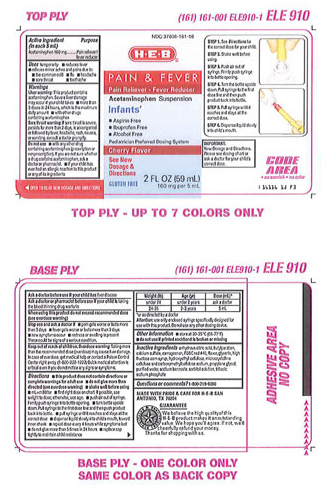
Recalled - Acetaminophen infant suspension liquid

November 1, 2013 – Product Recall – Perrigo Initiates Nationwide Voluntary Product Recall of Acetaminophen Infant Suspension Liquid, 160 Mg/5 Ml, Due to a Potential Defect with the Co-packaged Oral Syringe.